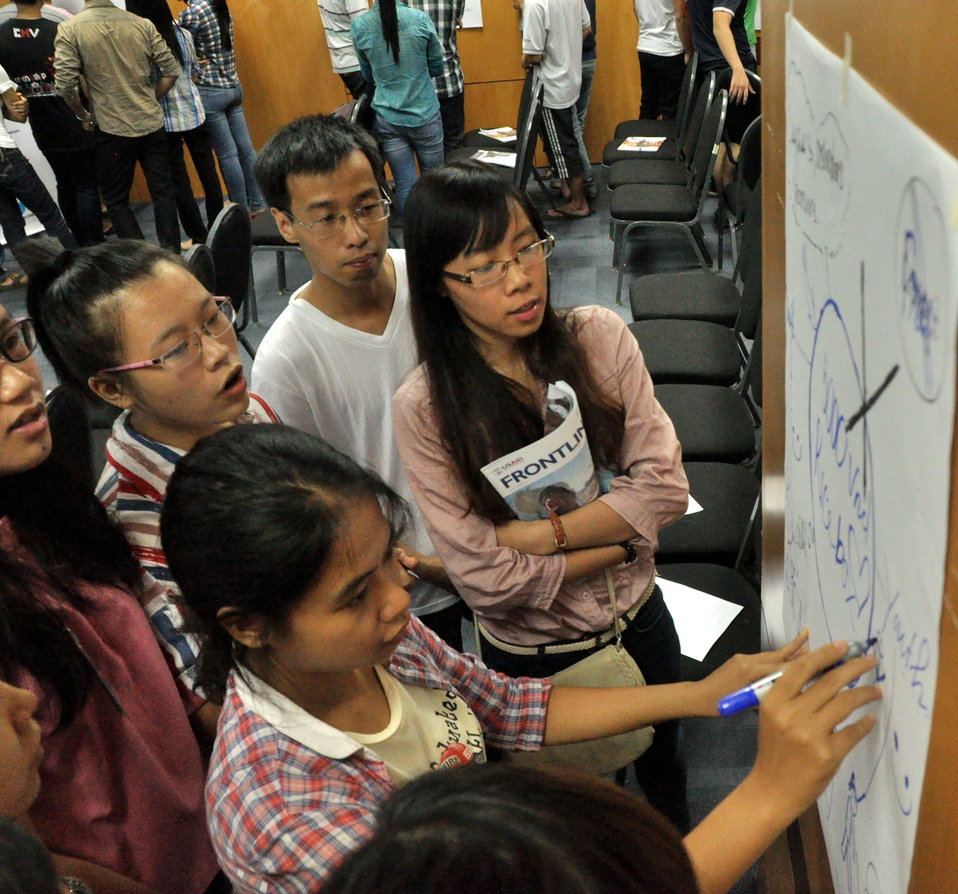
International Youth Day 2013: USAID hosts a lively discussion and group exercise on how youth can join in to advance development 0685

Hanoi, August 12, 2013.